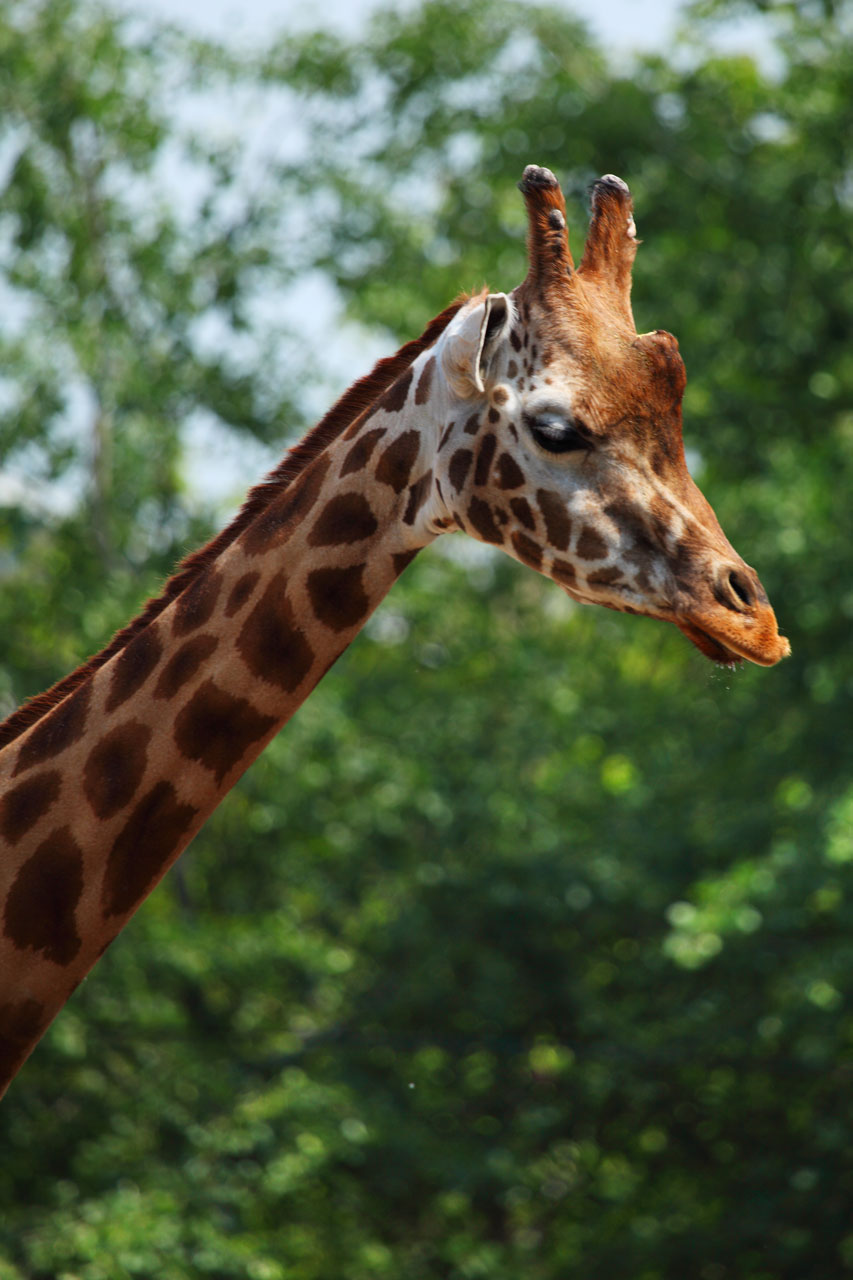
Giraffe on green background.